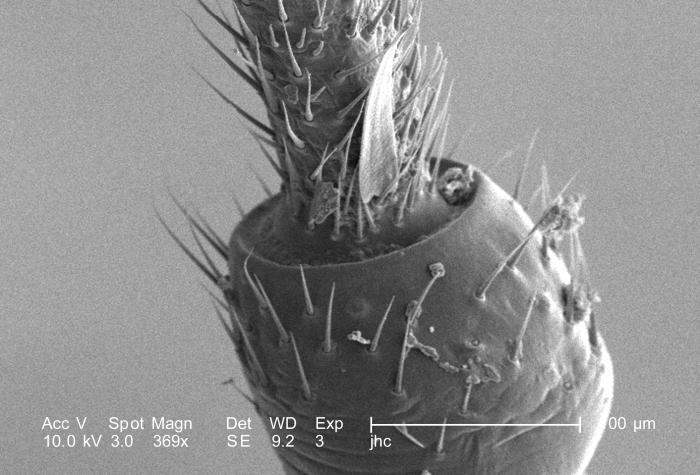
Under a moderate magnification of 369X, this scanning electron micrograph (SEM) revealed some of the exoskeletal ultrastructural morphology of an unidentified debris-laden insect, which had been discovered deceased in the suburbs of Decatur, Georgia. Depicted in this particular image was a section of one of the insect's six legs, which emanated from its thoracic region, located between its head and abdominal regions. The scattered particulate matter adorning the insect's exoskeletal surface was merely environmental debris common to its habitat. The fact that this organism maneuvered about on jointed legs, placed it into the Phylum Arthropoda, i.e., Arthro